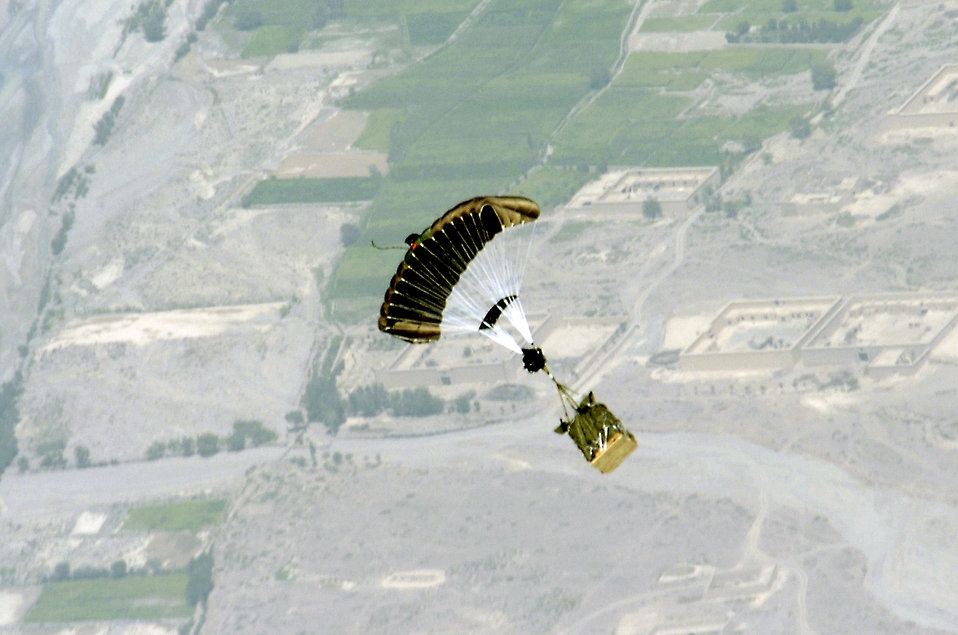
Bagram C-130s drop high-tech cargo delivery system

A new Global Positioning System-guided Joint Precision Air Drop System bundle, known as Screamer 2K, floats to the ground after being dropped from the back of a C-130 Hercules over Afghanistan Aug. 31. The drop was made from 17,500 feet above sea level, and was the first joint Air Force-Army operational drop of JPADS in the U.S. Central Command area of responsibility. Four bundles were dropped from the Alaska Air National Guard C-130. All four bundles arrived at the drop zone, resupplying Army troops on the ground with ammunition and water.